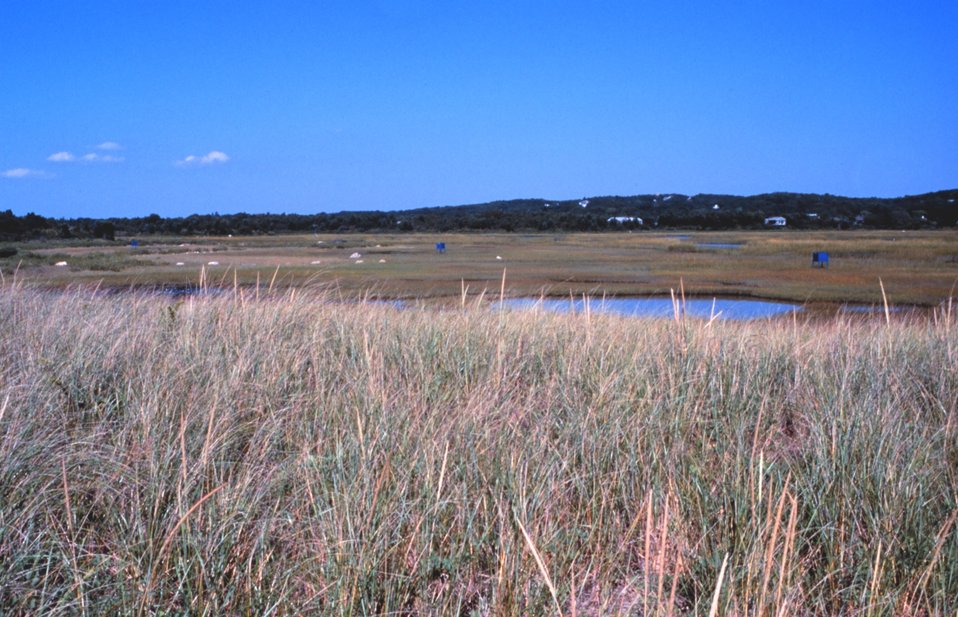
Great Sippewissett Marsh, West Falmouth